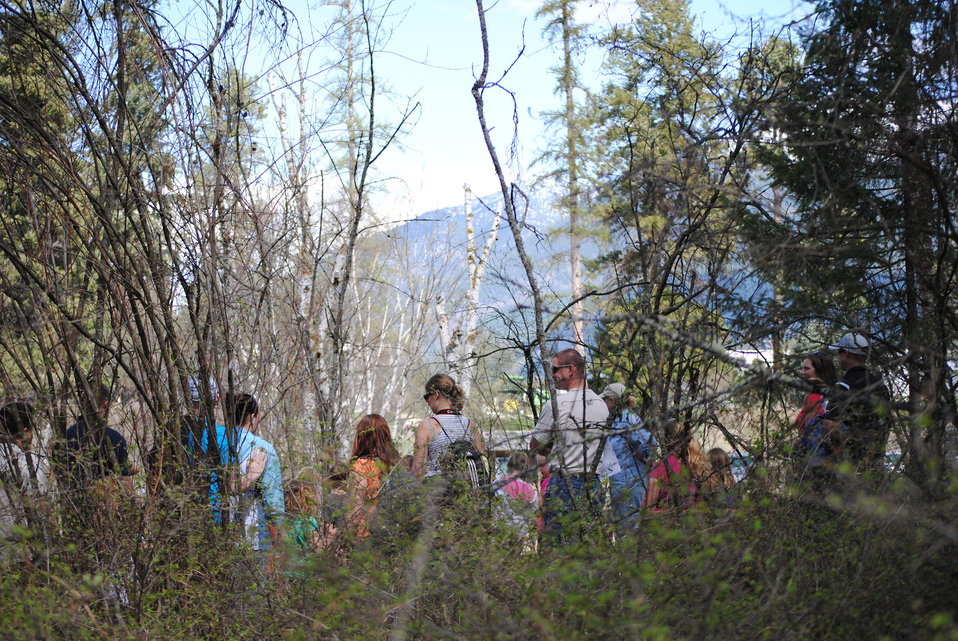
Creston National Fish Hatchery provides many educational opportunities for area schools and families.